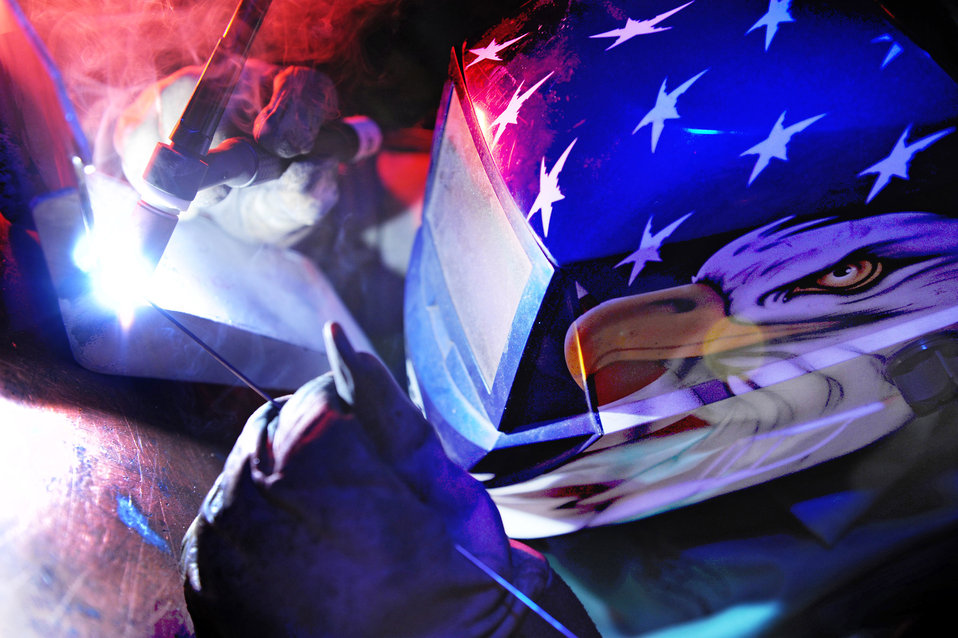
Eagle eye welder

Senior Airman Nathan Schroeder welds a crack on a landing gear cover Feb. 24 at Ellsworth Air Force Base, S.D. The cover protects hydraulic lines on the landing gear from damage.